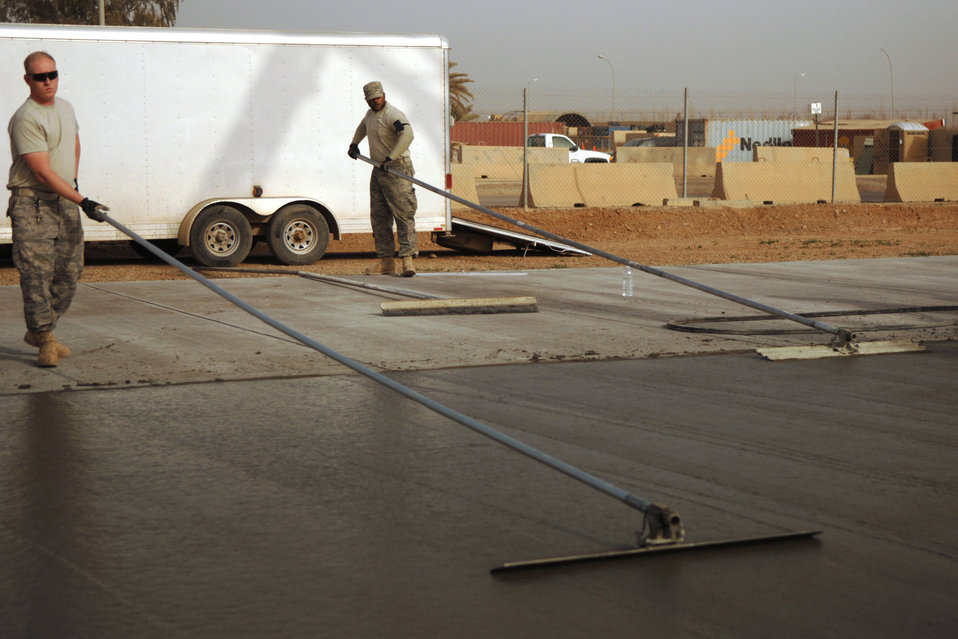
Set in stone

Tech. Sgt. Bryan Crane (left) and Staff Sgt. Derek McDonald use cement-finishing tools to even out the surface of a concrete pad Feb. 15 during a construction project at Joint Base Balad, Iraq. The NCOs, pavement and construction equipment operators with the 332nd Expeditionary Civil Engineer Squadron, helped complete a 76-meter concrete pad. Sergeant Crane is deployed from Grand Forks Air Force Base, N.D., and Sergeant McDonald is deployed from Andrews AFB, M.D.